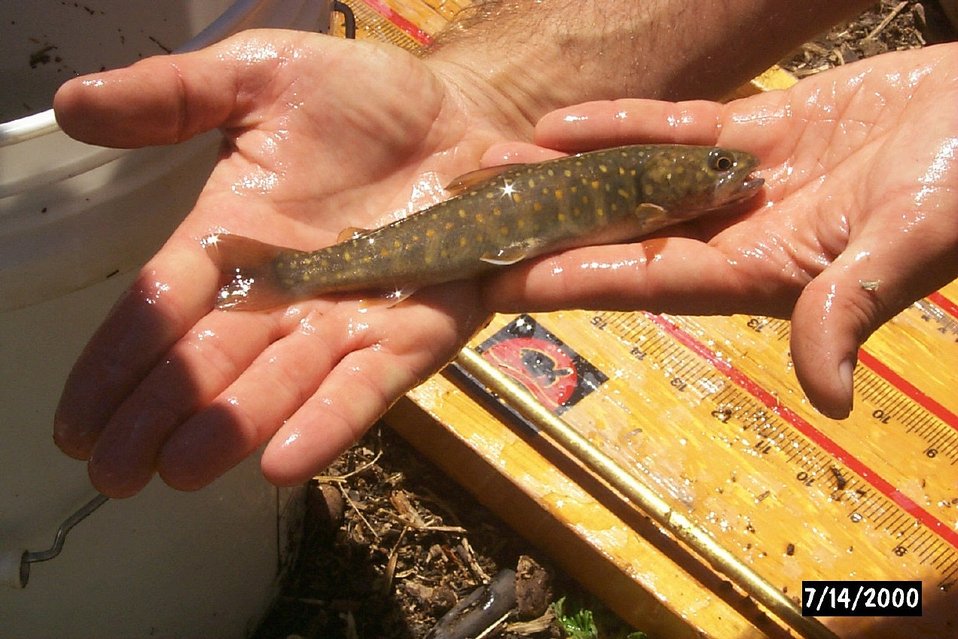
Young Bull trout Salmon Field Office UCSC Upper Columbia Salmon Clearwater District